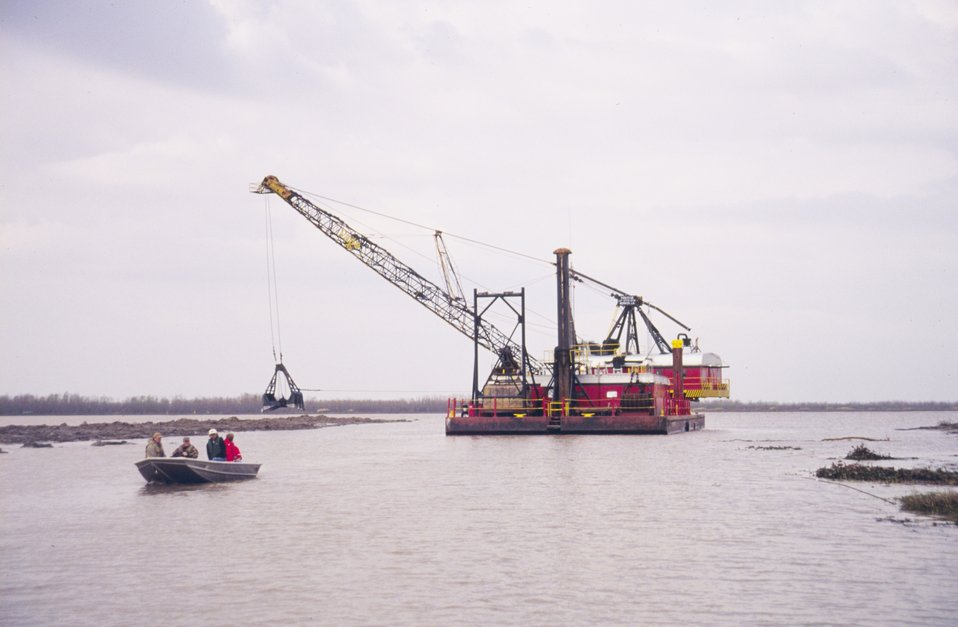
The bucket dredge at Natal Channel.